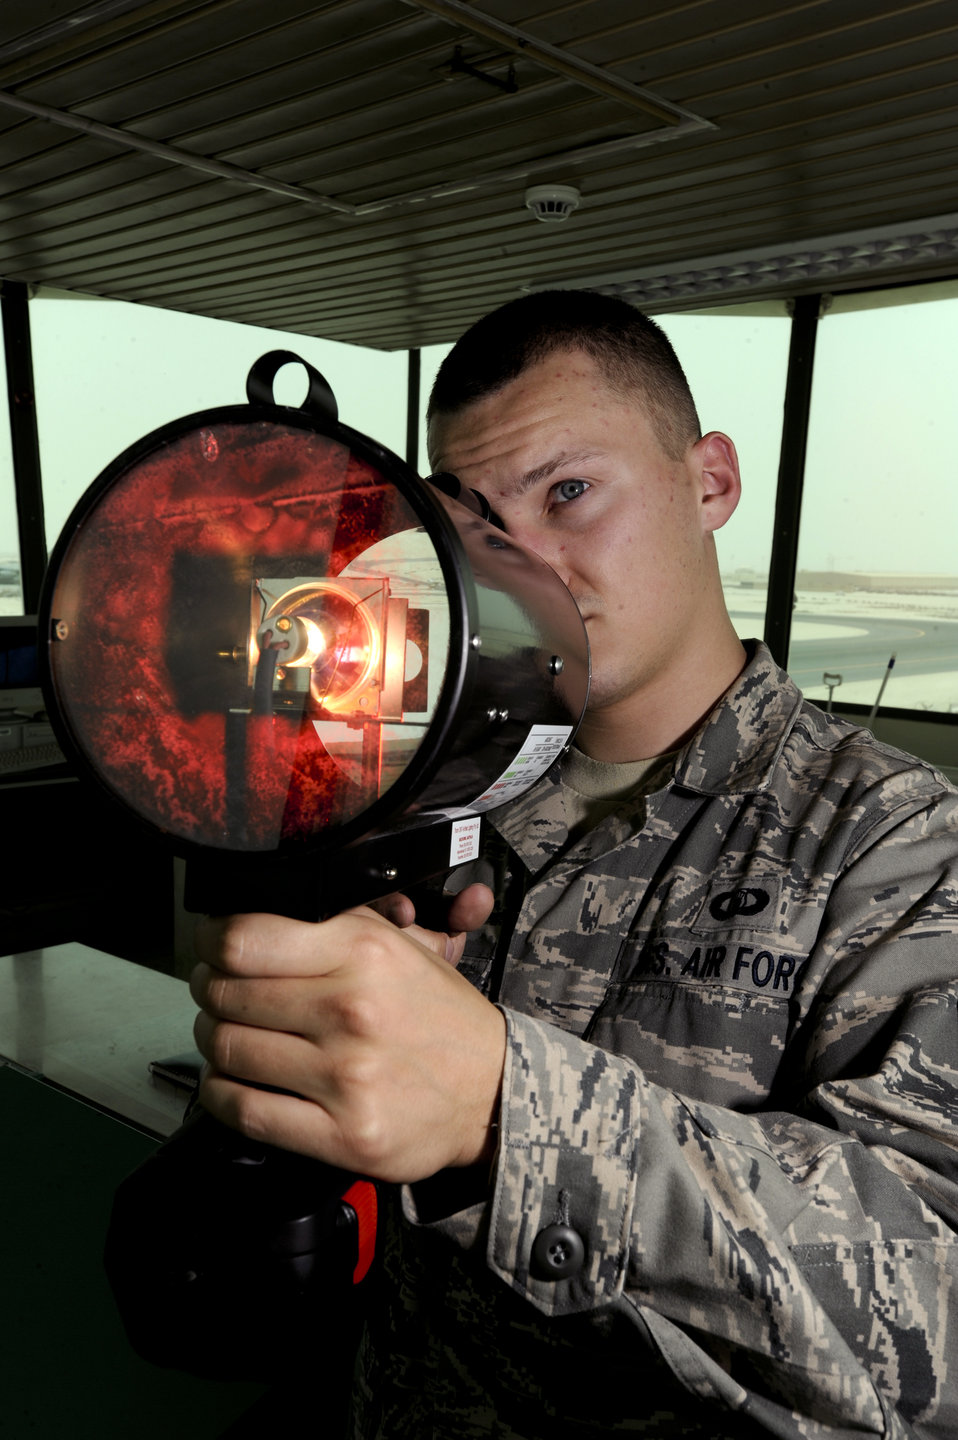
Controllers keep aircraft moving

Senior Airman Stephen Boniol uses a control tower light signaling gun May 18 at an air base in Southwest Asia. The light gun is used to communicate with aircraft or ground vehicles during electronic communications failures. Airman Boniol is a 379th Expeditionary Operations Support Squadron air traffic controller deployed from Alexandria Air National Guard Base, La.